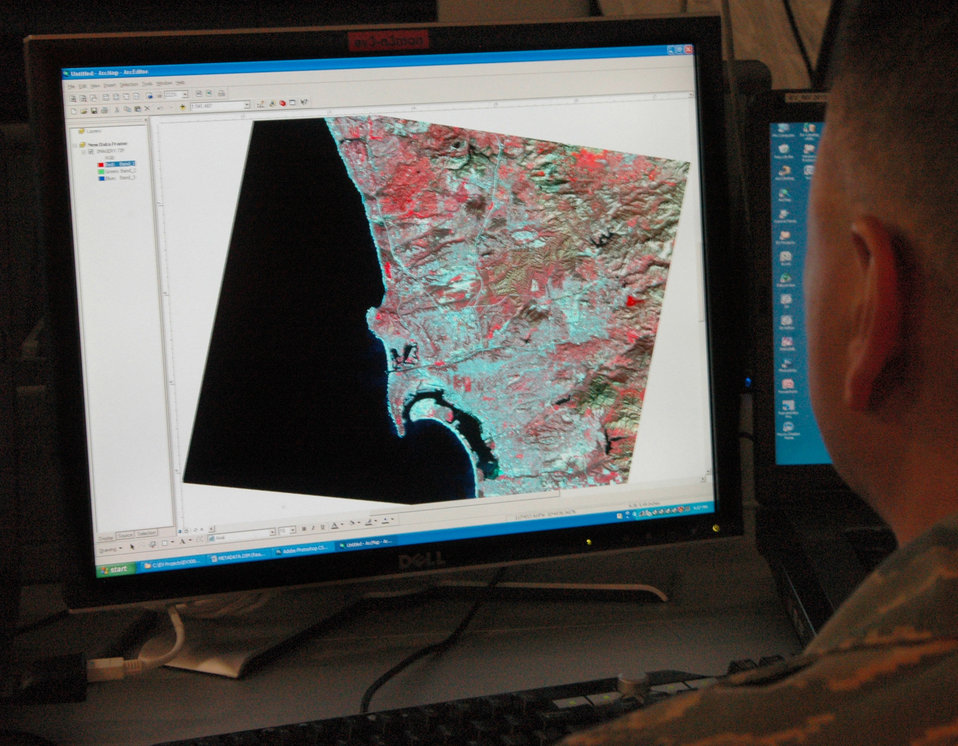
Eagle Vision lands at Peterson

Eagle Vision uses FalconView, a Windows-based mapping system software that displays various types of maps and geographically referenced overlays, shown here Nov. 12 at Peterson Air Force Base, Colo.